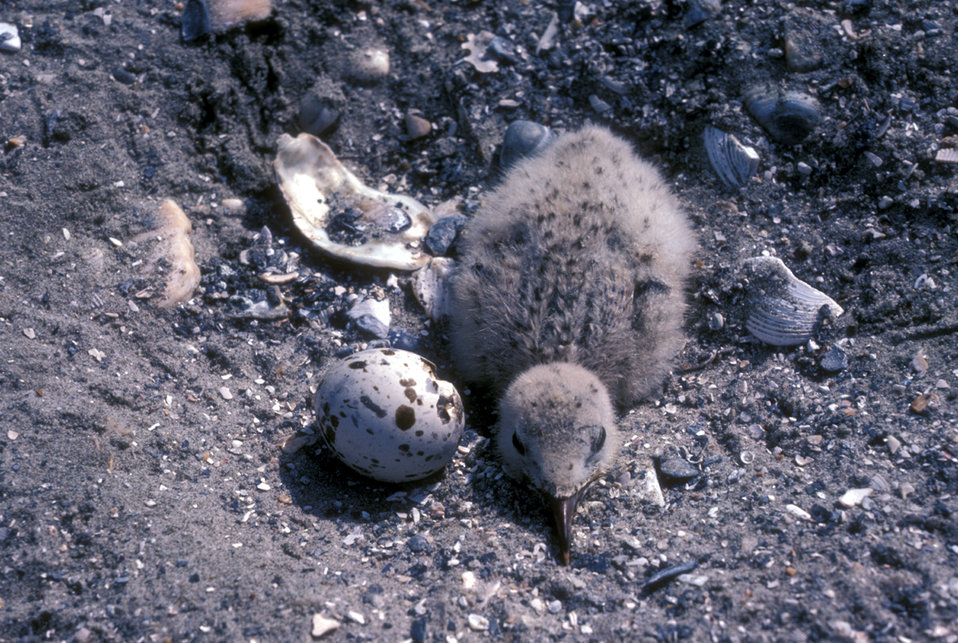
Black skimmer chick

A black skimmer chick on Breton National Wildlife Refuge.